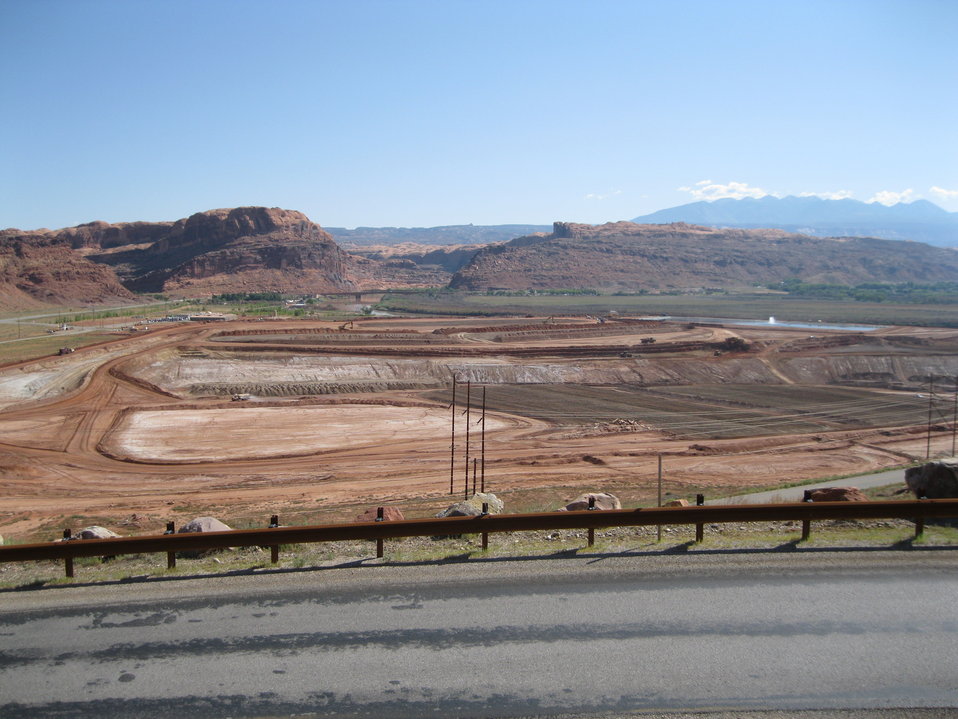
Moab Mill Tailings Removal Project Makes Progress in Utah

A view of the uranium mill tailings pile, looking east toward Moab.